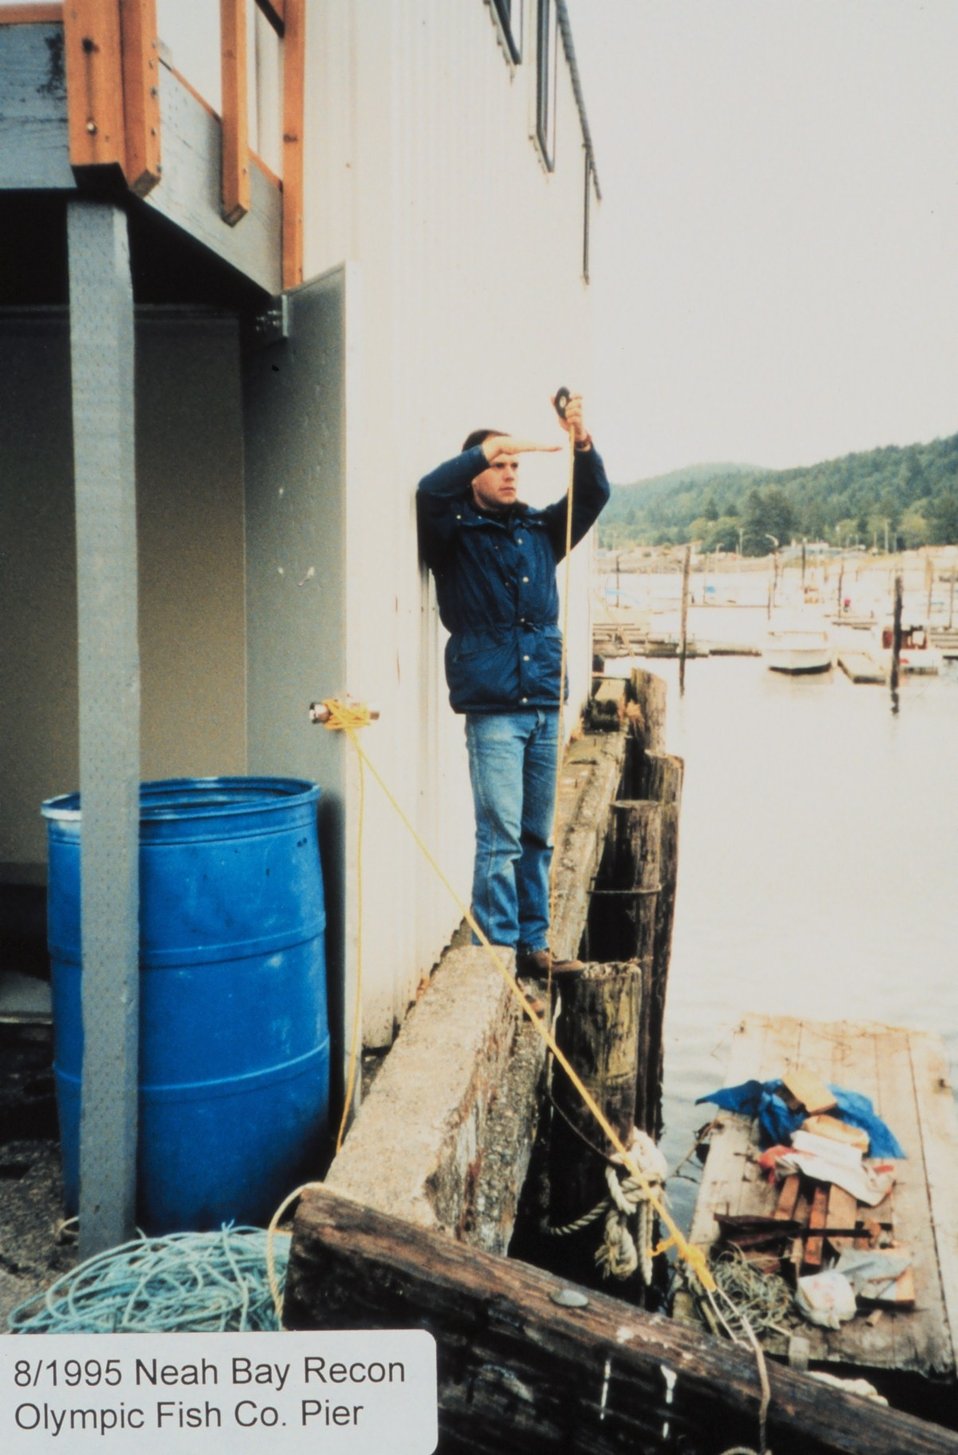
Performing reconnaissance for tide gage installation on the Olympic Fish Company pier.